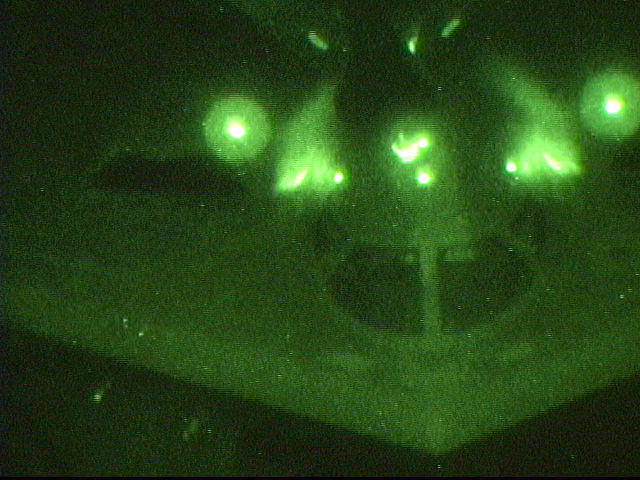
Night flight

PERATION IRAQI FREEDOM -- A B-2 Spirit bomber with the 40th Air Expeditionary Wing prepares to received fuel from a KC-135 Stratotanker during a March 28 mission in support of Operation Iraqi Freedom.